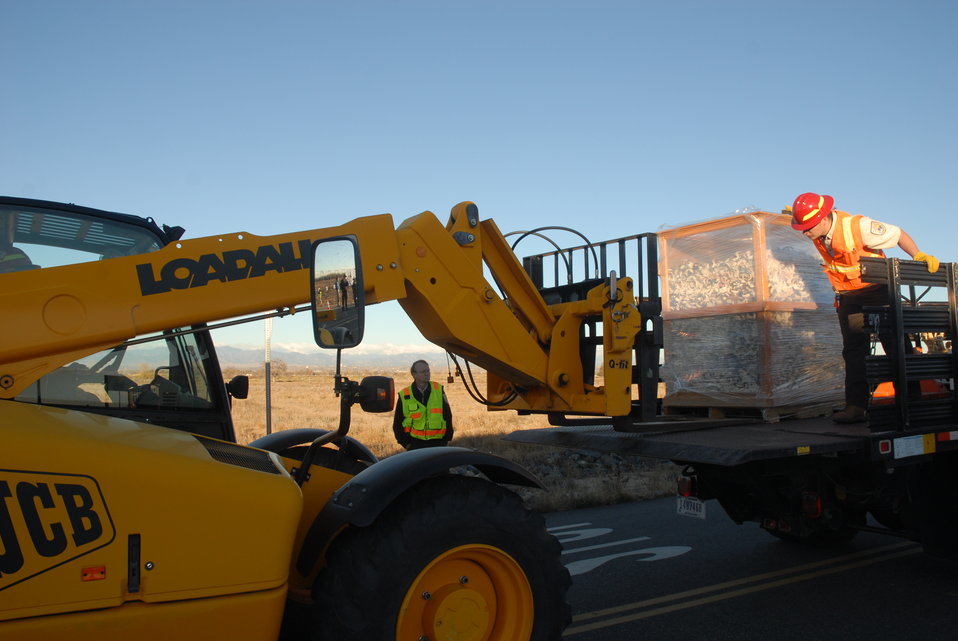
Before sunrise crews began loading ivory which FWS seized during undercover investigations of organized smuggling operations or confiscating at the U.S. border over the past 25 years.